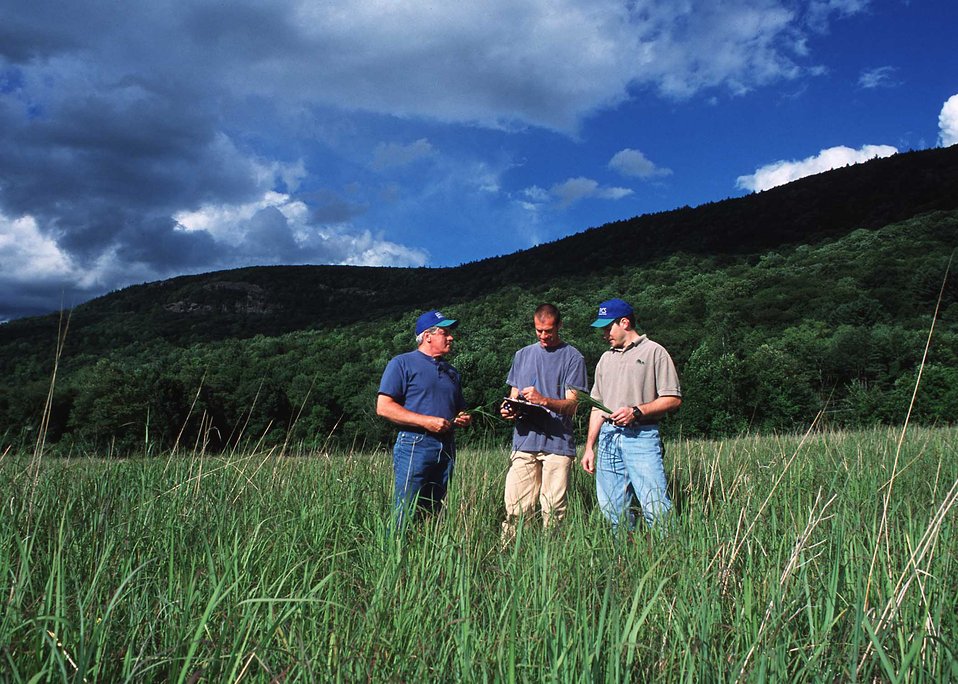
NRCS Soil Conservationist, Todd Bobowick and Alan Page reviewing a warm season grassland management plan with a Litchfield County landowner.